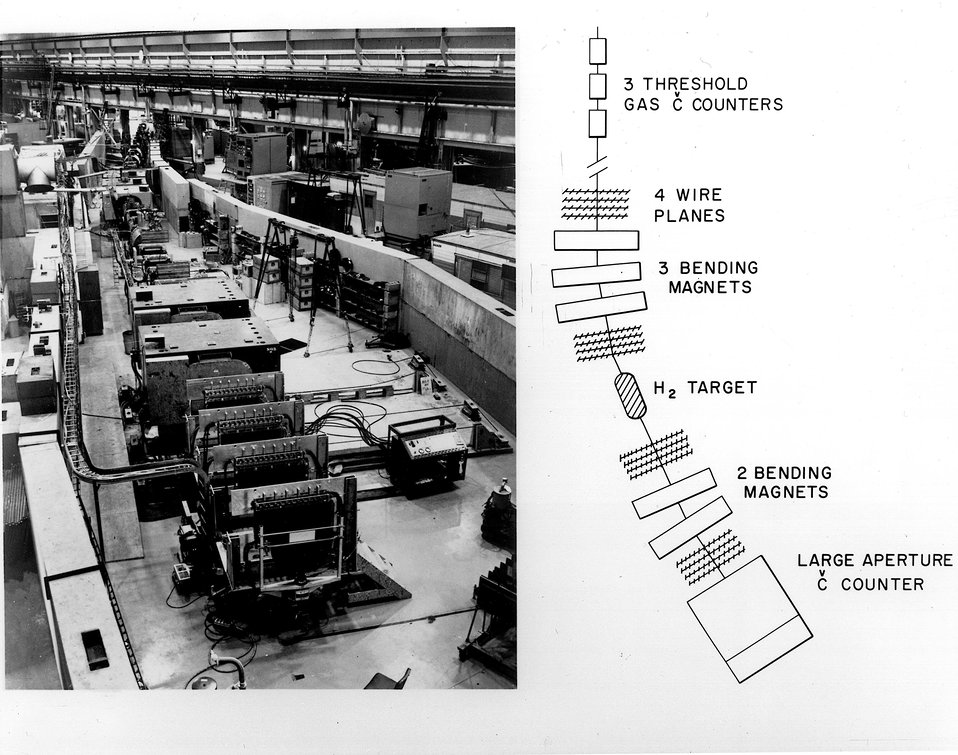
Photograph and simplified sketch of the high resolution wire spark chamber particle spectrometer system in the Experimental Area at the Alternating Gradient Synchrotron. c. 1968